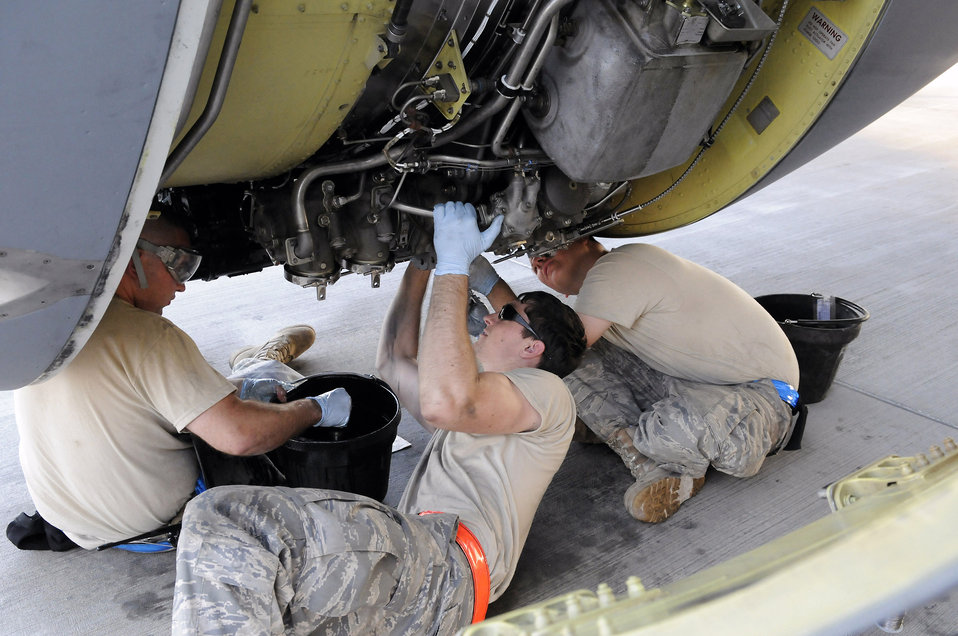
Engine tune up

Staff Sgt. Eric Mutschlechner performs a 60-hour inspection as Staff Sgt. Anthony Hernandez and Airman 1st Class Alexander Lesch perform a 120-hour inspection on a KC-135 Stratotanker engine Nov. 20 at an air base in Southwest Asia. KC-135s provide the core aerial refueling capability for the Air Force and support to Navy, Marine Corps and allied nation aircraft in the U.S. Central Command area of responsibility. Sergeant Mutschlechner is a native of San Marcos, Texas, and is deployed from MacDill Air Force Base, Fla. Sergeant Hernandez hails from Barstow, Calif., and is deployed from McConnell AFB, Kan. Airman Lesch is from Burlington, Wis., and deployed from Grand Forks AFB, N.D. All three are assigned to the 379th Expeditionary Aircraft Maintenance Squadron.